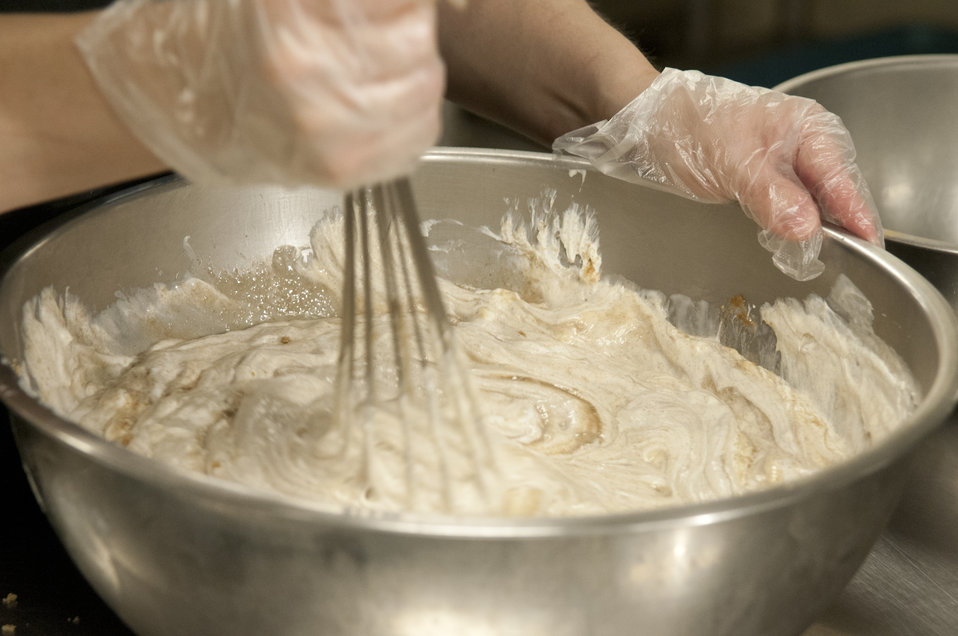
School lunch staff and students enjoy the new school lunch menu created to meet the new standards at the Yorkshire Elementary School in Manassas, VA on Friday, Sept. 7, 2012.